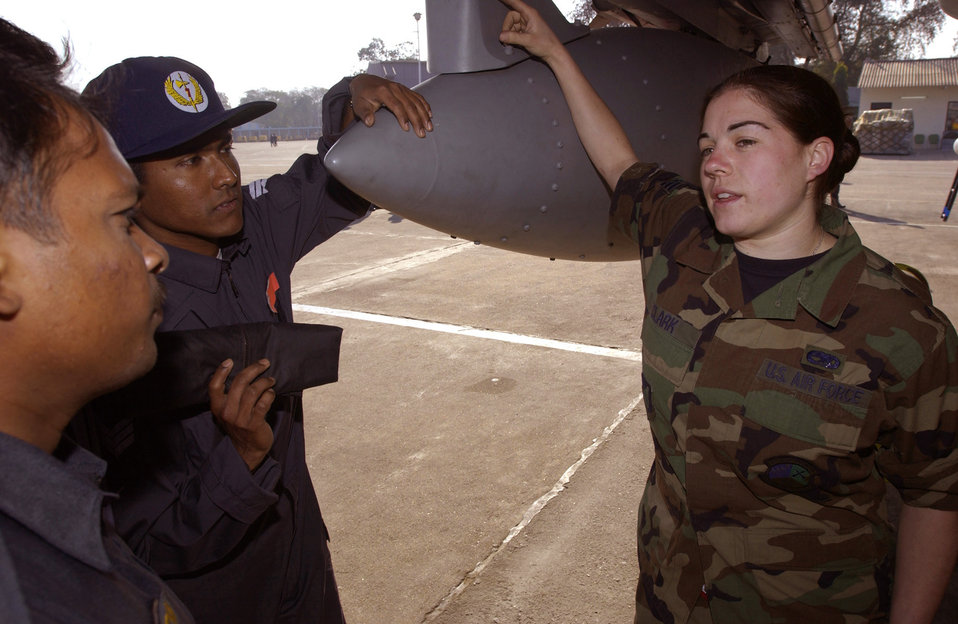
cope india 04

GWALIOR AIR FORCE STATION, India (AFPN) - Senior Airman Colleen Clark (right) discusses emergency fuel shutdown procedures and other F-15 Eagle maintenance issues with Indian air force maintenance workers here. Airman Clark is a repair and reclamation specialist with the 3rd Equipment Maintenance Squadron deployed here from Elmendorf Air Force Base, Alaska, for Cope India 04.